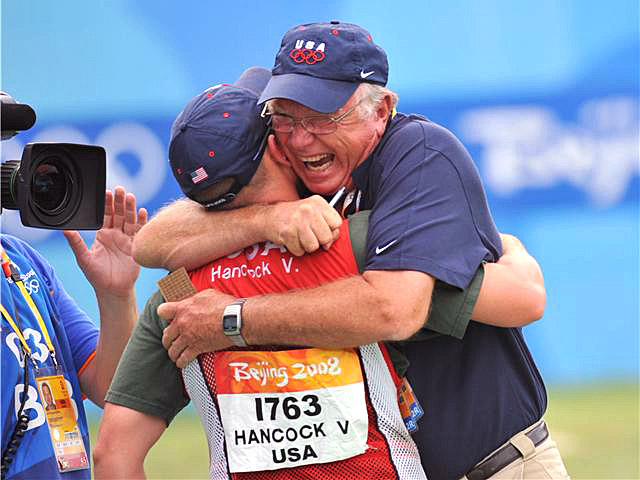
Golden hug

Team USA shotgun coach Lloyd Woodhouse hugs Army Pfc. Vincent Hancock after the Soldier won the Olympic gold medal in the men's skeet competition Aug. 16, in China. Private Hancock is assigned to the Army Marksmanship Unit at Fort Benning, Ga. Coach Woodhouse is a retired Air Force chief master sergeant.